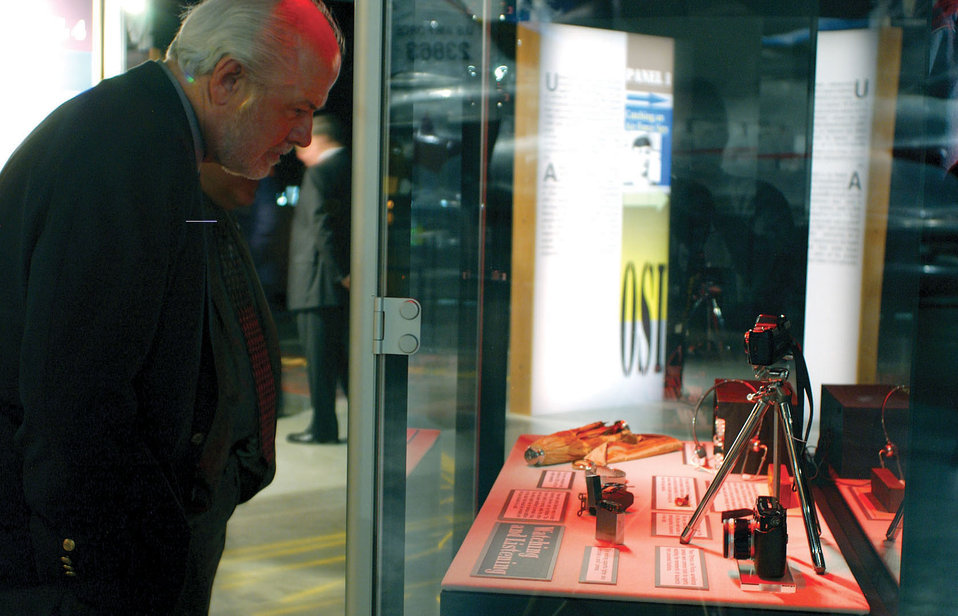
Office of Special Investigations exhibit opens at Air Force museum

DAYTON, Ohio -- A new exhibit featuring the Air Force Office of Special Investigations opened at the National Museum of the U.S. Air Force here April 20. The exhibit highlights notable OSI tasks such as counterintelligence, responding to espionage and investigating terrorist attacks. A disguise kit, surveillance cameras, electronic listening devices and a wristwatch modified to act as a radio transmitter are some of the items used by OSI agents that are featured in the display.